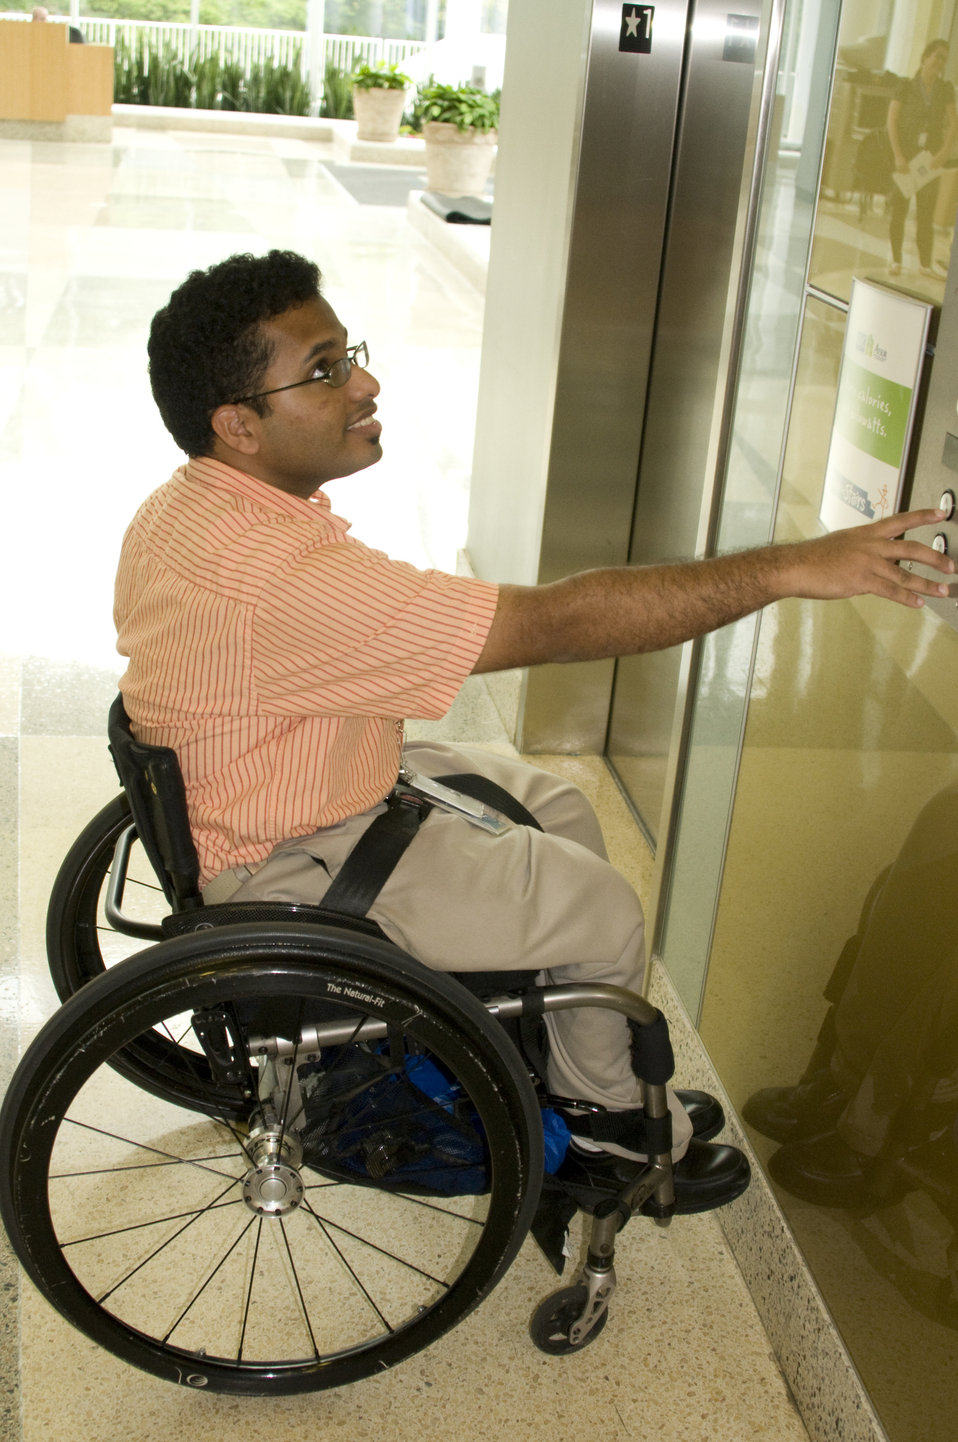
Seated in a wheelchair, the man depicted here was in the process of hailing an elevator from the first floor of one of the Centers for Disease Control and Prevention's (CDC) campus facilities. He was pressing the 'Up' call button, and was looking at the lighted floor indicator above the doors, as he awaited the arrival of an elevator car.